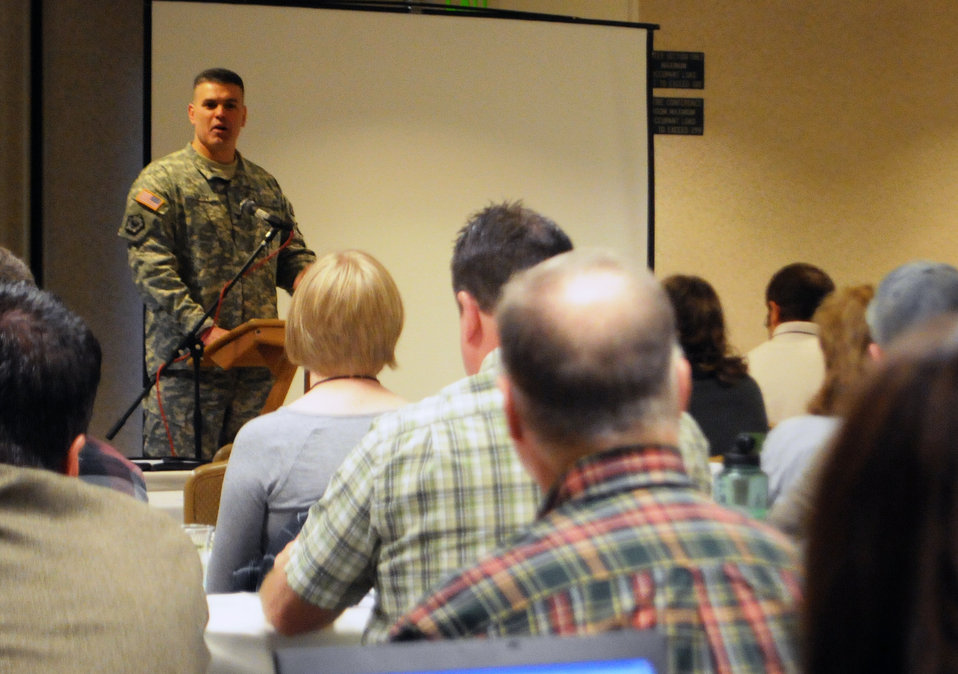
SANTA CRUZ, Calif. (March 16, 2011) -- Col. Bill Leady, commander of the U.S. Army Corps of Engineers South Pacific Division, speaks to park rangers during the annual park rangers training here March 15. More than 100 park rangers from the four districts of the South Pacific Division and the Bureau of Reclamation are in attendance at the week-long training event.

'The public knows the Corps through its parks and lakes,' said Leady. 'Getting outdoors is important for people, and our rangers assist visitors every day to make the experience safe and enjoyable.”